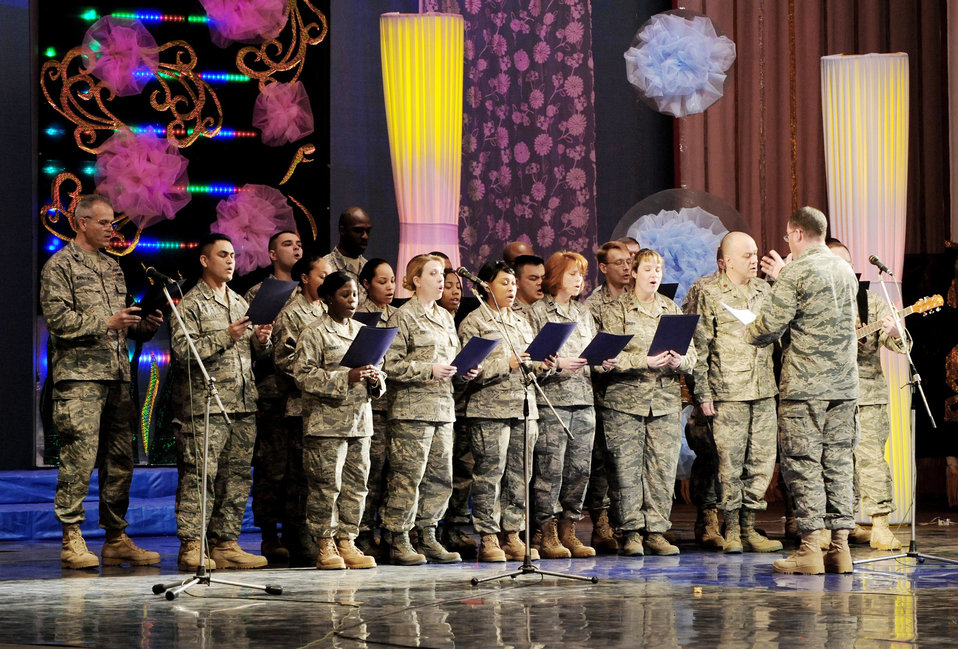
Airmen participate in Kyrgyz Philharmonic

Airmen from the Transit Center at Manas in Kyrgyzstan, sing